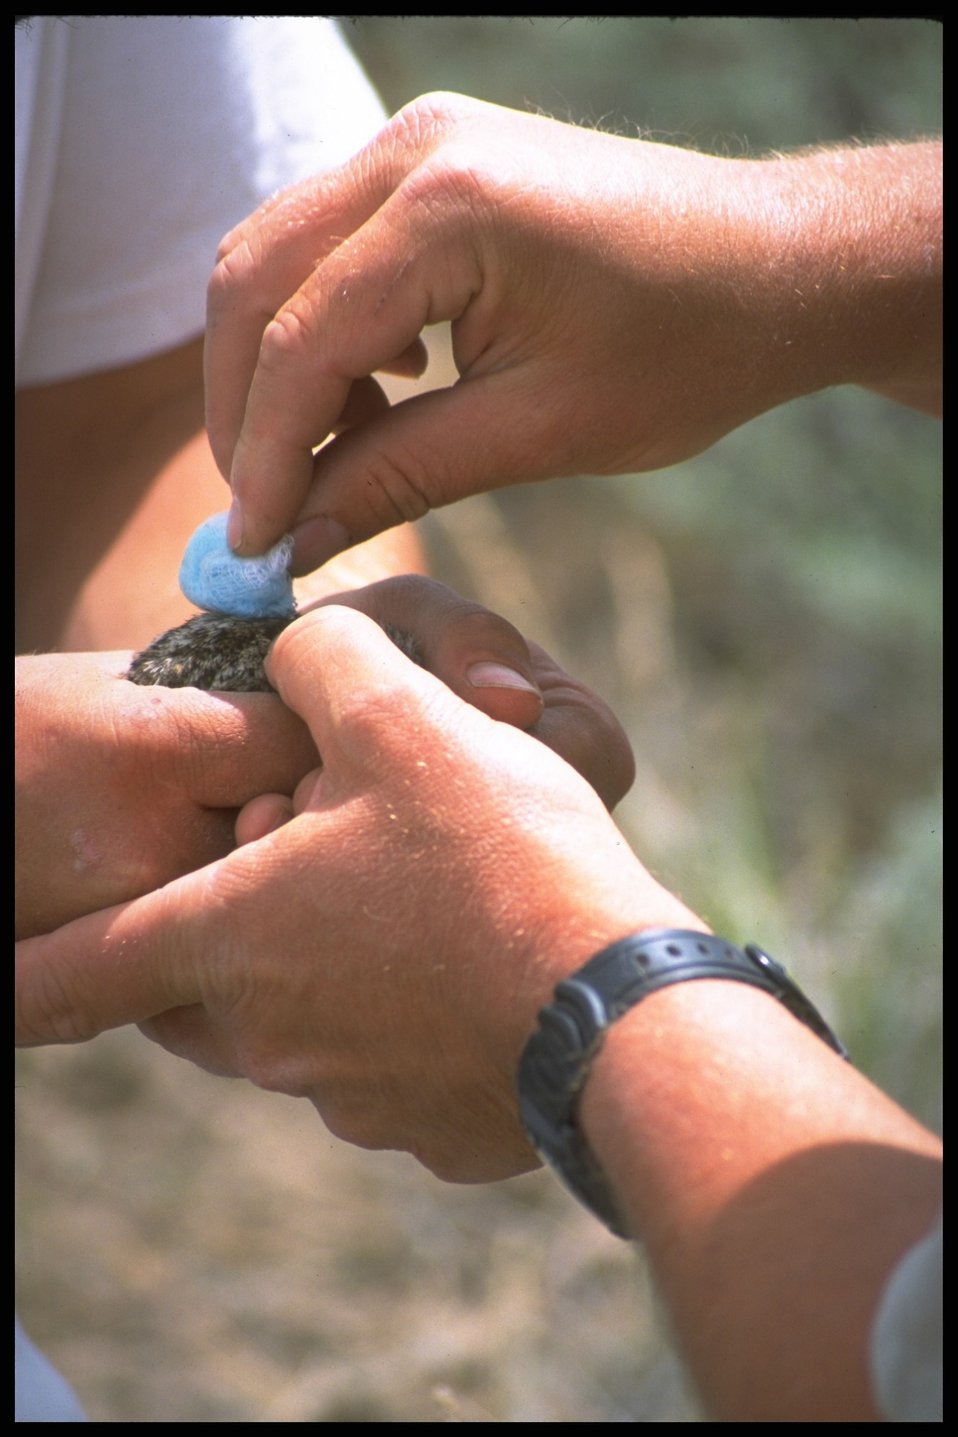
Sage Grouse Chick, Lakeview District.